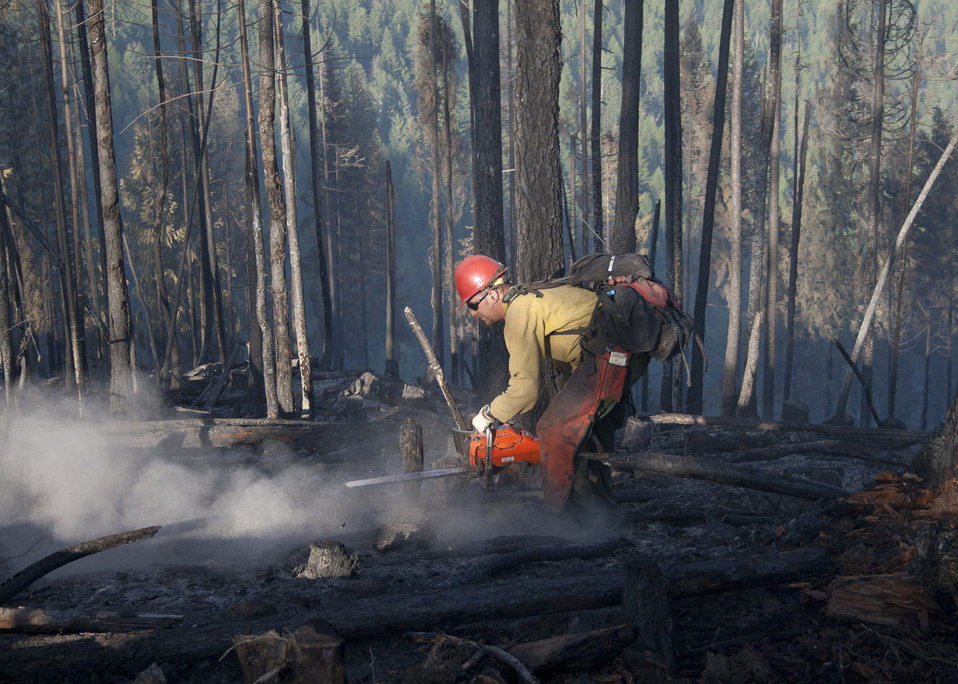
Firefighters supported by three fire engines, two helicopters, two water tenders, a dozer and an air tanker battled to contain the 90 acre Rogers Fire located on Mt. Rogers five miles west of Aladdin, WA on the Colville National Forest. Firefighters worked under adverse conditions with steep terrain and gusting winds to reduce the loss of timber and protect the Rogers Mountain Trail. The Rogers Fire began on Aug. 9, 2011 and was controlled by Aug. 19, 2011 with mop up crews ensuring that no flare-ups occurred. Colville National Forest has 1.1 million acres in northeastern Washington and includes the Kettle River, Selkirk Mountain ranges, and the upper reaches of the Columbia River.